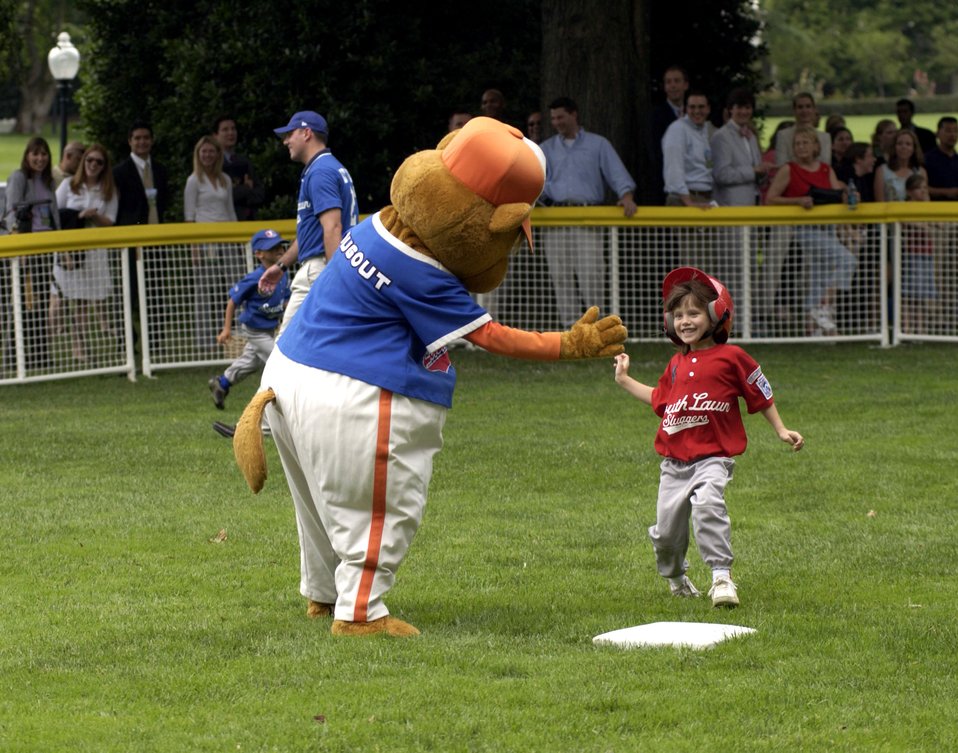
Tee ball on the South Lawn

Little League mascot Dugout receives a high-five from 5-year-old Kellie Kohn, a member of the McGuire Yankees, after she got a hit during the annual